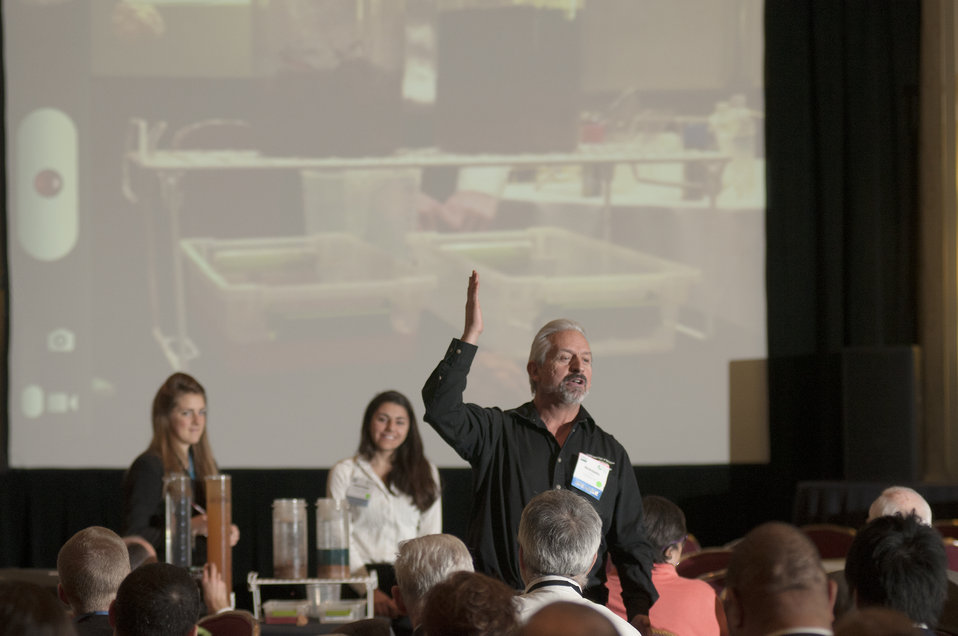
The U.S. Department of Agriculture (USDA) Natural Resources Conservation Service National Soil Health and Sustainability Team Agronomist Ray Archuleta demonstrate the usually unseen and misunderstood differences between healthy soil and how soils can become unhealthy, during the
2013 Agricultural Outlook Forum held at the Crystal Gateway Marriott Hotel in Arlington, VA on Friday, Feb. 22, 2013. Mr Archuleta is a champion for understanding soil health as the foundation for farming sustainably in the 21st century: reducing chemical inputs; creating sustainable farming; improving water holding capacity; improving the farmer’s bottom line; and feeding an increasing global population. The breakout session on Reducing Risks by Improving Soil Health examined the indicators of soil health, to reduce chemical inputs and apply the right techniques for sustainable production and other benefits. Soil health is defined as the capacity of the soil to function as a living ecosystem that sustains plant, animal, and human health with limited human intervention.